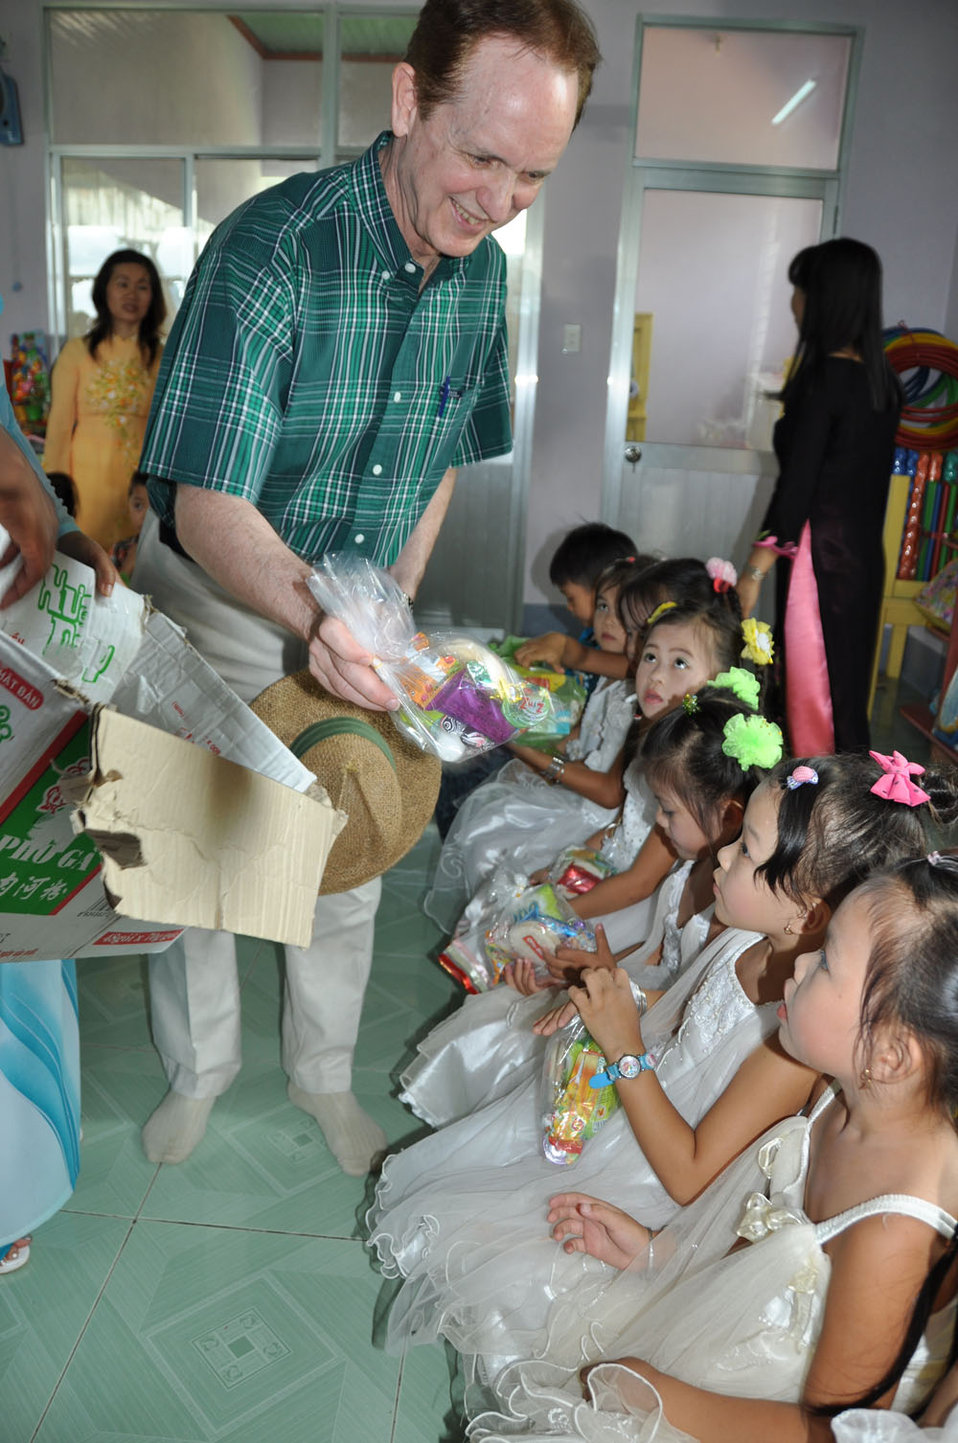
Children in Kon Tum, Vietnam, enjoy their new pre-schools refurbished with USAID funding

USAID Director Francis Donovan greets children after the handover ceremony of 25 pre-schools.